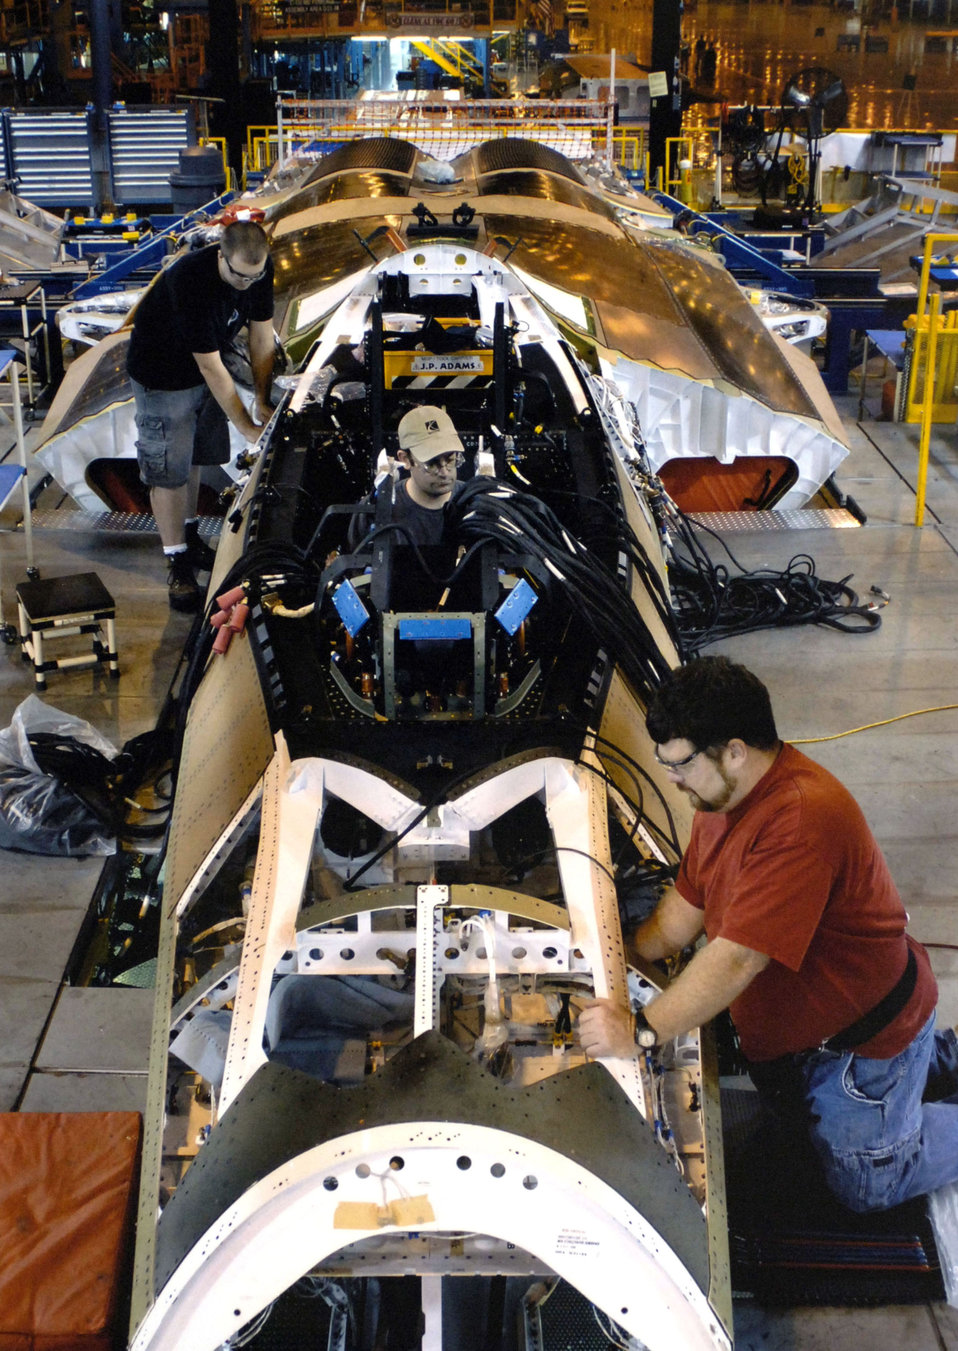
PACAF leaders see flash of future in Georgia

Employees at Lockheed Martin's F-22 Raptor assemble Raptor 4087. The aircraft is destined for Elmendorf Air Force Base, Alaska. It is the first of 36 Raptors that will be assigned to Pacific Air Forces.